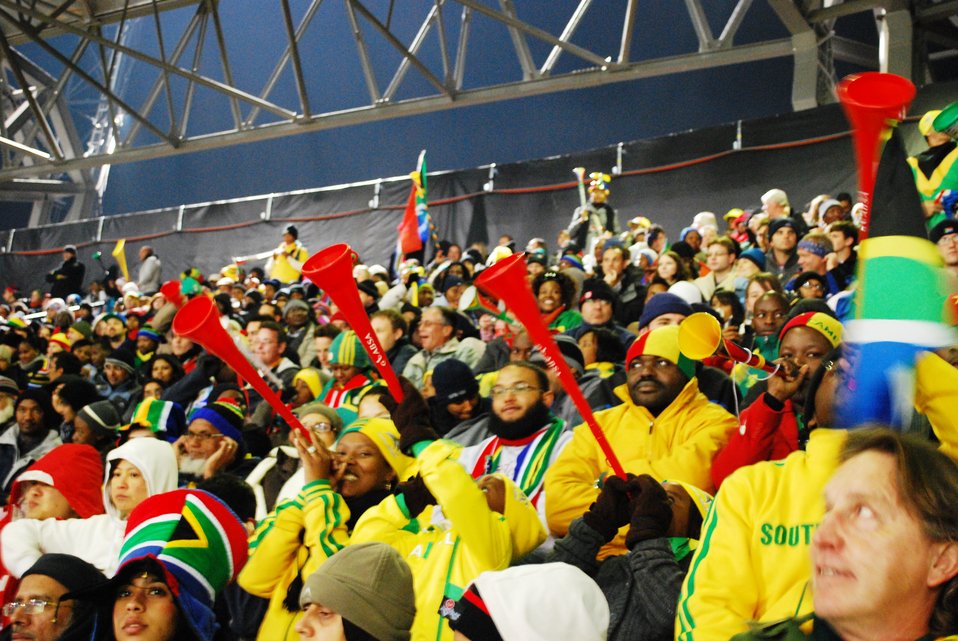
South African fans cheer at the Denmark vs. Cameroon World Cup match at Loftus Versfeld Stadium in Pretoria, South Africa, on June 19, 2010.